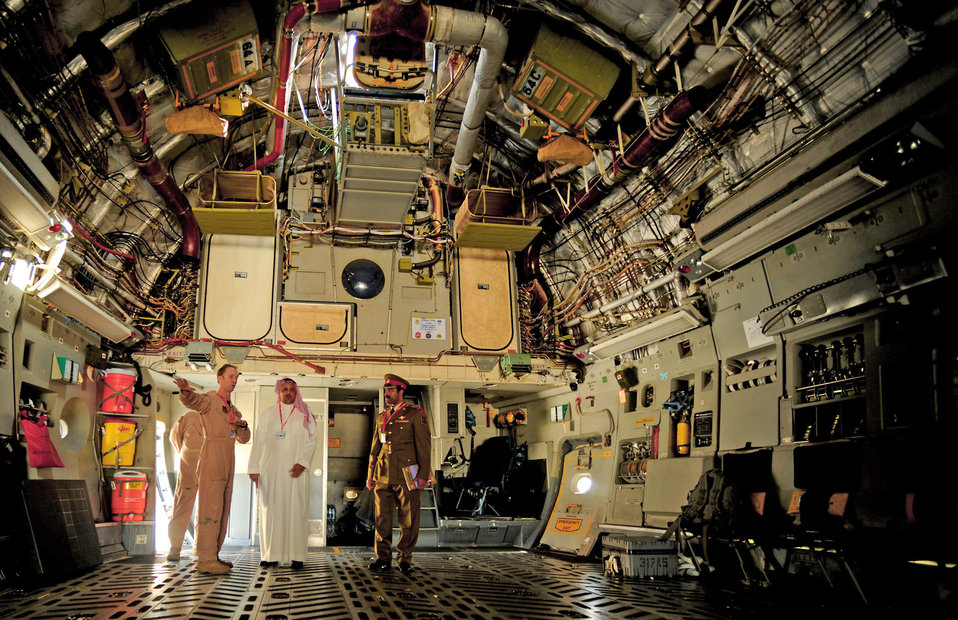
Airmen support inaugural Bahrain International Airshow

Maj. Edward Taillon explains the capabilities of the transport aircraft to members of the Saudi Arabian air force during the Bahrain International Airshow, Jan. 21, 2010. Major Taillon is a C-17 Globemaster III pilot with the 317th Airlift Squadron.